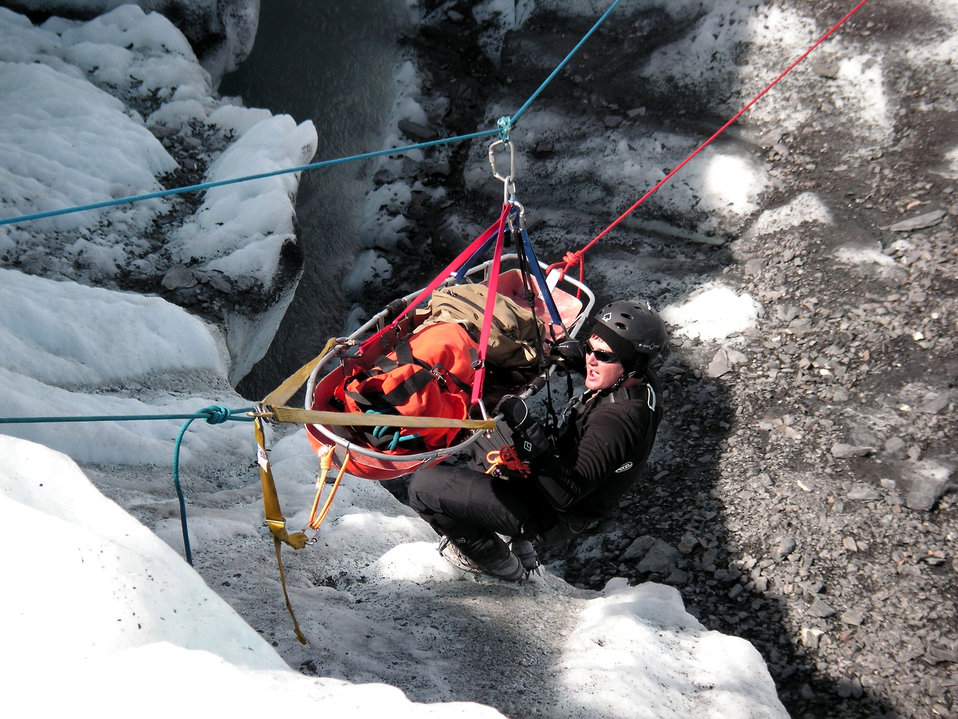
Pararescuemen chance the extremes

A pararescuemen uses a pulley system with a carriage to rescue a simulated victim from a glacier near Eielson Air Force Base, Alaska, as part of Exercise Northern Edge 2006.